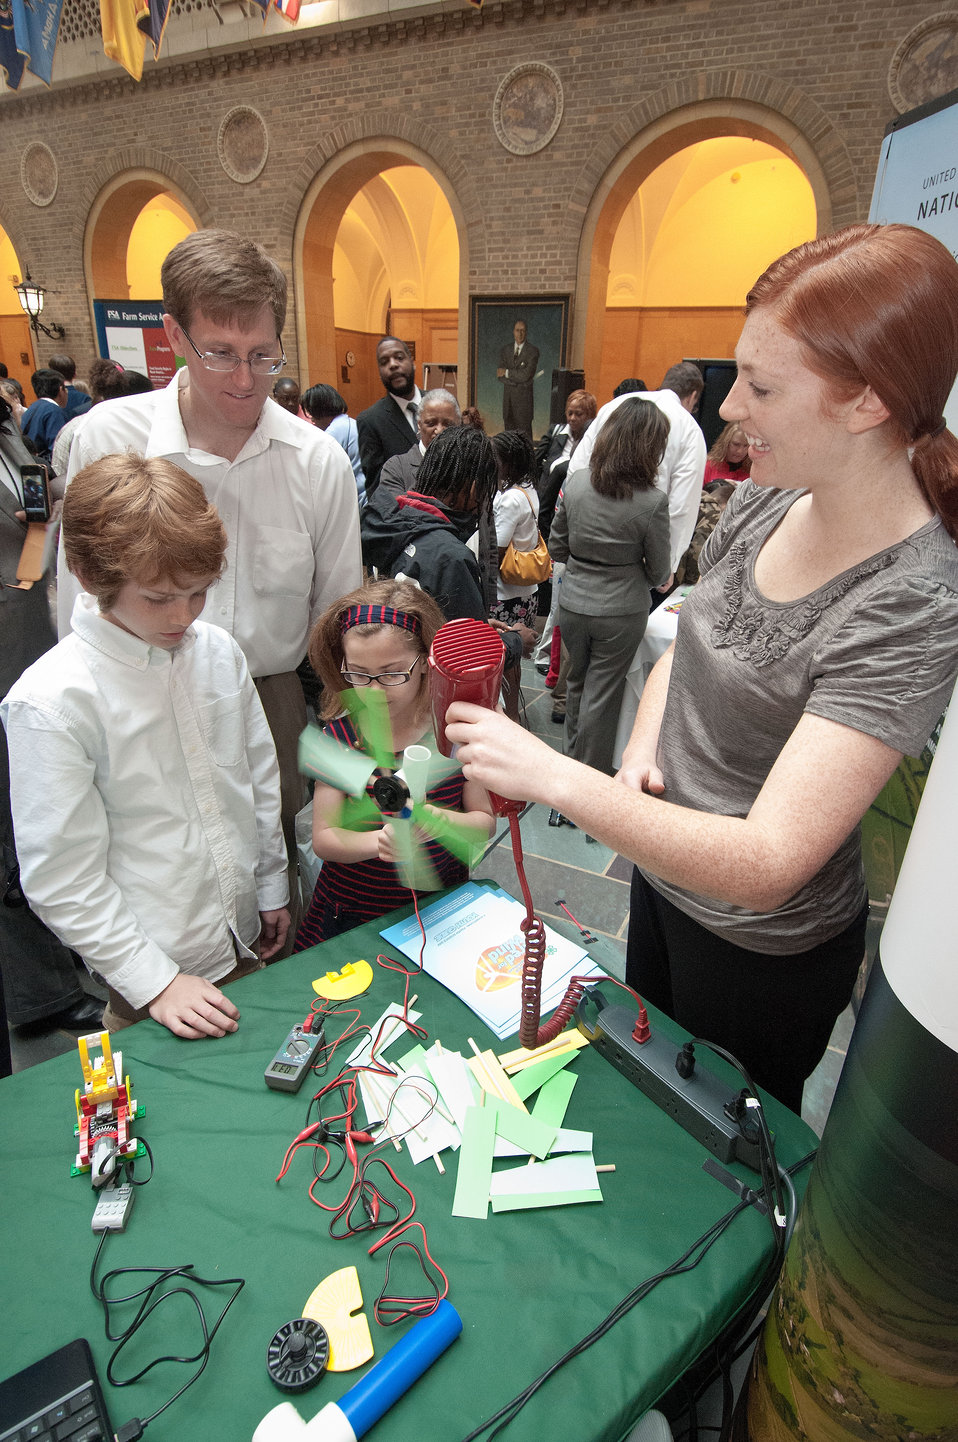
From left: Nick, Tony and Lily Halstead watch a meter to see how much electricity is created in a wind energy experiment demonstrated by Lindsay Jewel, National Institute of Food and Agriculture at the United States Department of Agriculture, Take Our Daughters and Sons to Work and Earth Day in Washington, D.C. on Thursday, April 26, 2012.